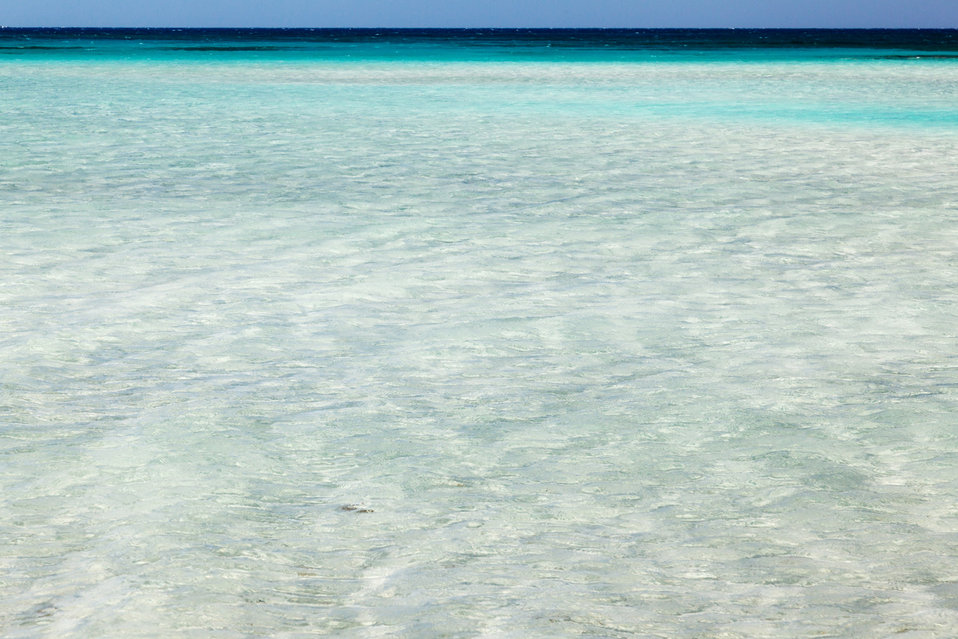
Calm lagoon sea surface

Perfect calm lagoon with white sand.